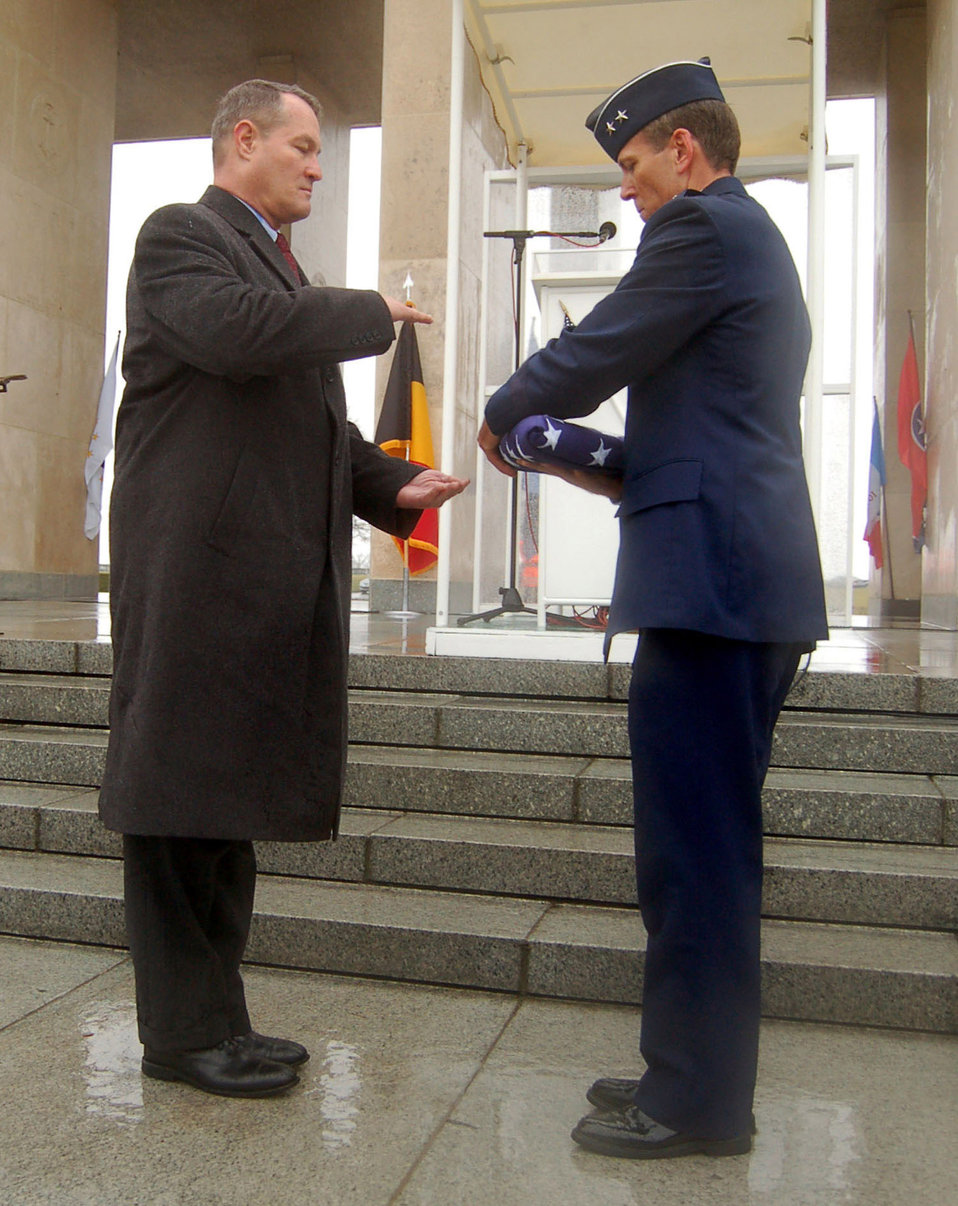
World War II MIAs recovered in Germany

Maj. Gen. Thomas B. Wright hands a folded flag to U.S. Army retired Brig. Gen. Steven R. Hawkins to pay respects to the nine fallen Airmen of the McMurray Crew in the Army Air Corps who are no longer missing in action Feb. 20 at the Henri-Chapelle Cemetery and Memorial in Belgium. The B-24 bomber crew's remains were discovered after more than 60 years in a field southwest of Berlin. General Wright is the operations deputy chief of staff of operations for Supreme Headquarters Allied Powers Europe. General Hawkins is the director of the European region for the American Battle Monuments Commission.